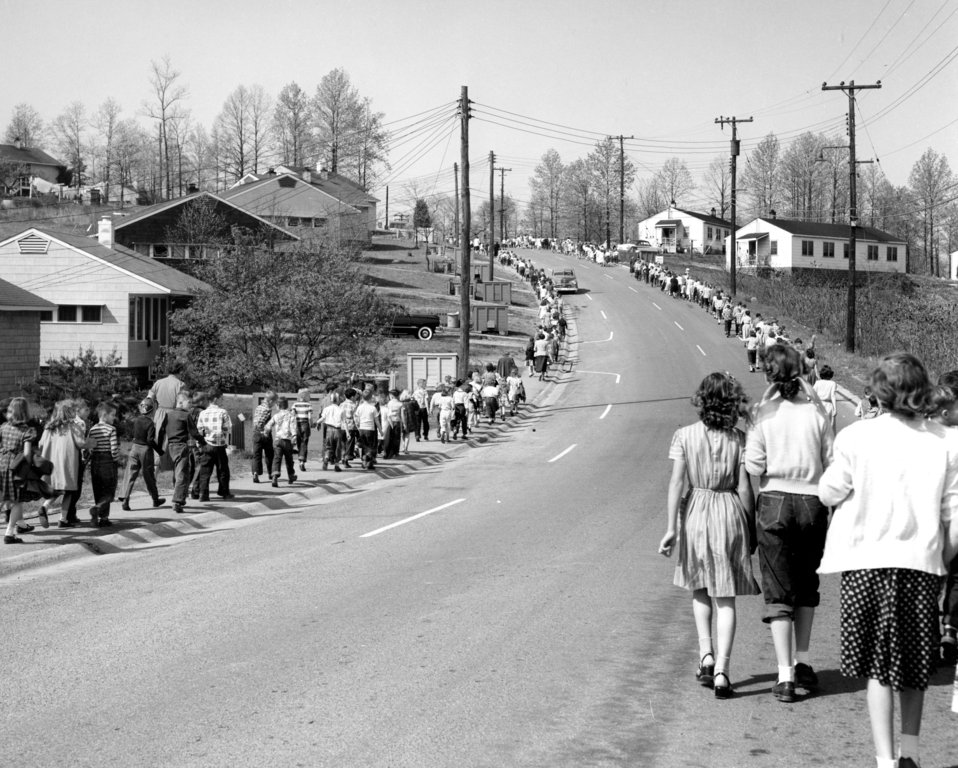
Civil Defense Air Raid Drill Oak Ridge 1953

8934-4 DOE photo H.P. Tarver 4-9-1953 Highland View School Oak Ridge Tennessee